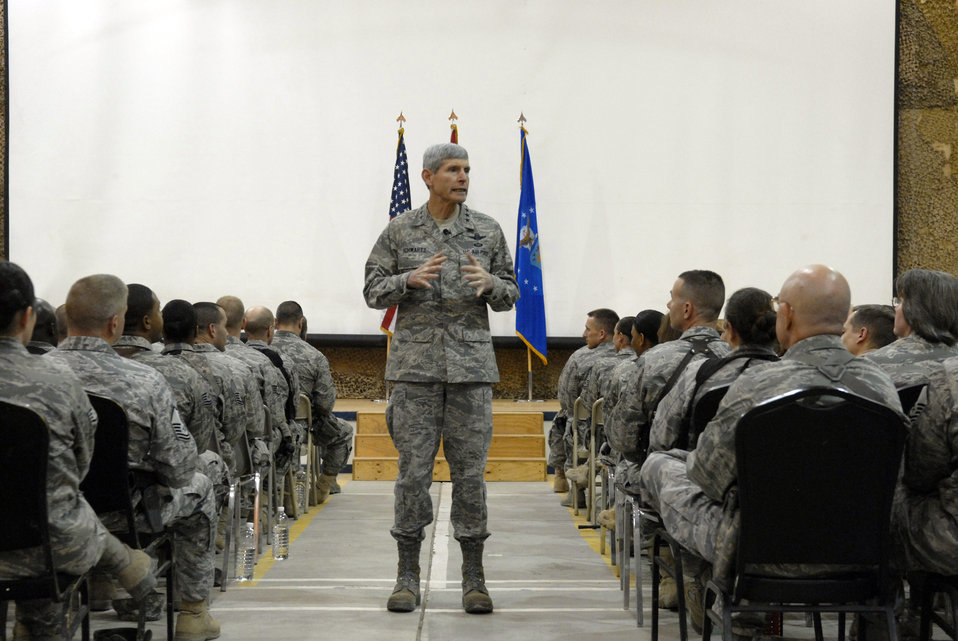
CSAF visits Airmen in Iraq

Air Force Chief of Staff Gen. Norton Schwartz talks with Airmen Nov. 17, 2011, during an all call at Sather Air Base, Iraq. Schwartz held an all call for Sather Airmen and talked about the importance of teamwork. He explained how it has helped Airmen successfully accomplish their mission as part of Operation New Dawn and support the joint mission in Iraq over the last eight years. Schwartz visited Airmen throughout the U.S. Central Command area of responsibility in conjunction with attending the Dubai International Air Chiefs Conference. During his trip to Iraq, Schwartz met with Airmen at Sather Air Base and FOB Union III, as well as with U.S. and Iraqi leaders.